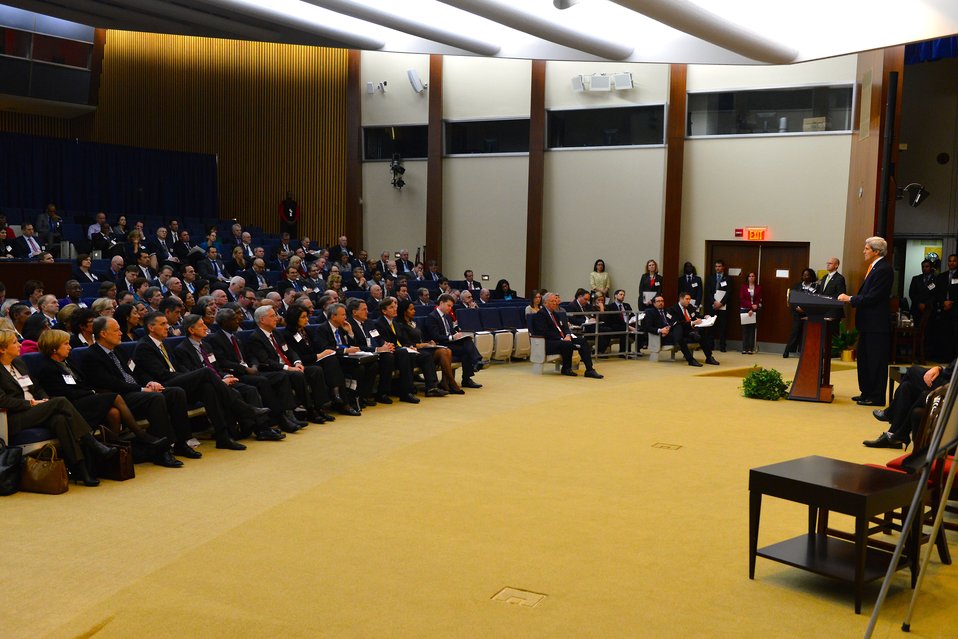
Secretary Kerry Delivers Remarks at the Global Chiefs of Mission Conference

U.S. Secretary of State John Kerry delivers opening remarks at the Global Chiefs of Mission Conference at the U.S. Department of State in Washington, D.C., on March 10, 2014.